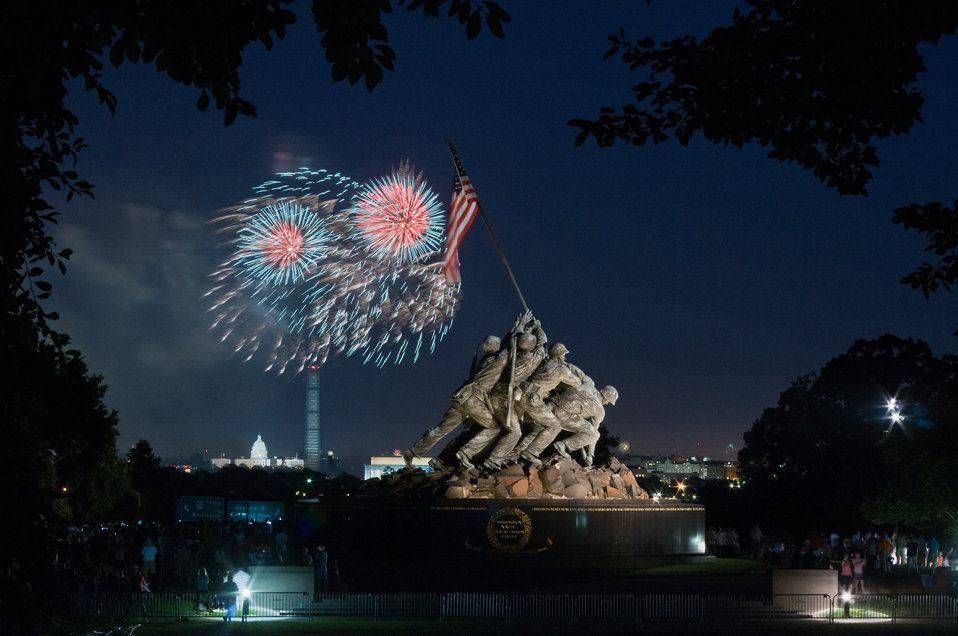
Fireworks are seen from the U.S. Marine Corps Memorial area, in Arlington, VA on Jul. 4, 2013. To the left, in the distance, is a corner of the Lincoln Memorial, then the U.S.. Department of Agriculture (USDA) Yates Building (dark red brick building), the Washington Monument (with work scaffolding), and the U.S. Capitol building seen in the distance, in Washington, D.C. The U.S. Marine Corps War Memorial represents this nation's gratitude to Marines and those who have fought beside them. While the statue depicts one of the most famous incidents of World War II, it is often referred to as the Iwo Jima Memorial; the memorial is dedicated to all Marines who have given their lives in the defense of the U.S. since 1775.